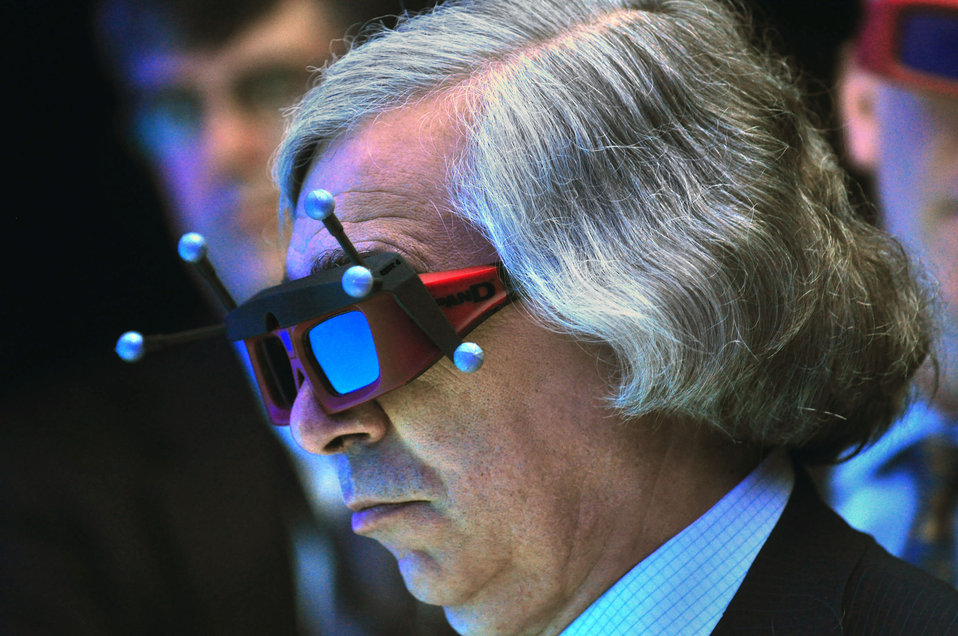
DOE Secretary of Energy Ernest Moniz in Oak Ridge

13-064 DOE photo Lynn Freeny 6-20-2013 Oak Ridge Tennessee